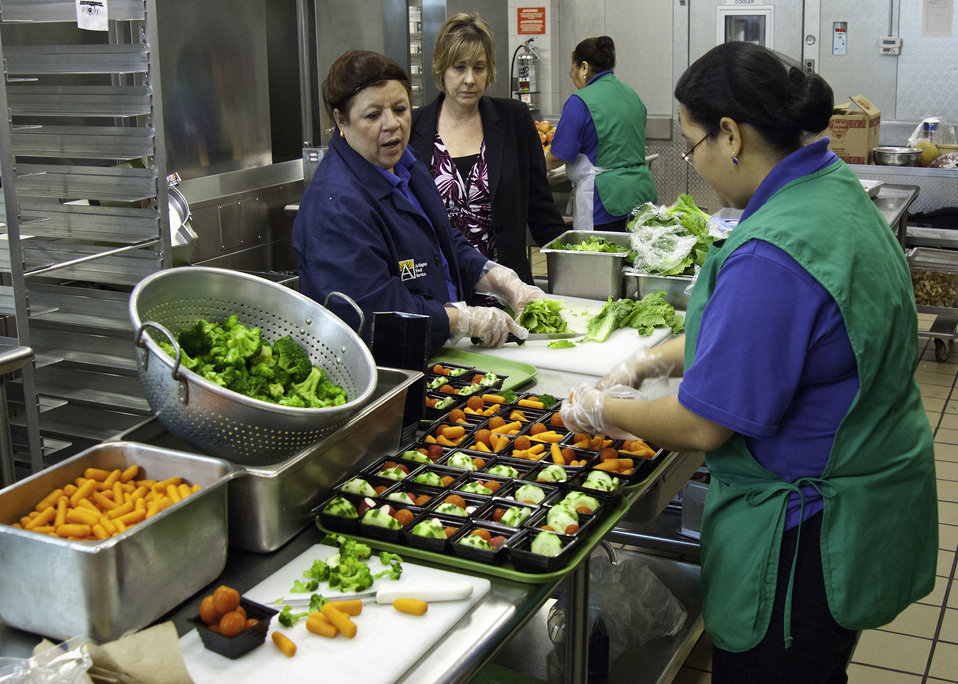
From left: Jackie Nampha, Manager, Washington-Lee High School Cafeteria, Amy Maclosky, Director, Arlington Public Schools, Food and Nutrition Services and Rosalba Gomez, cafeteria staff discuss the lunch service of Baja Fish Taco Wraps, Turkey Hot Dogs, Cherry Tomatoes w/dip, Baked Beans and Fresh Fruit for Washington-Lee High School in Arlington, Virginia, on Wednesday, October 19, 2011. The National School Lunch Program is a federally assisted meal program administered by the United States Department of Agriculture, Food and Nutrition Service operating in public, nonprofit private schools and residential child care institutions. It provides nutritionally balanced, low-cost or free lunches to children each school day.